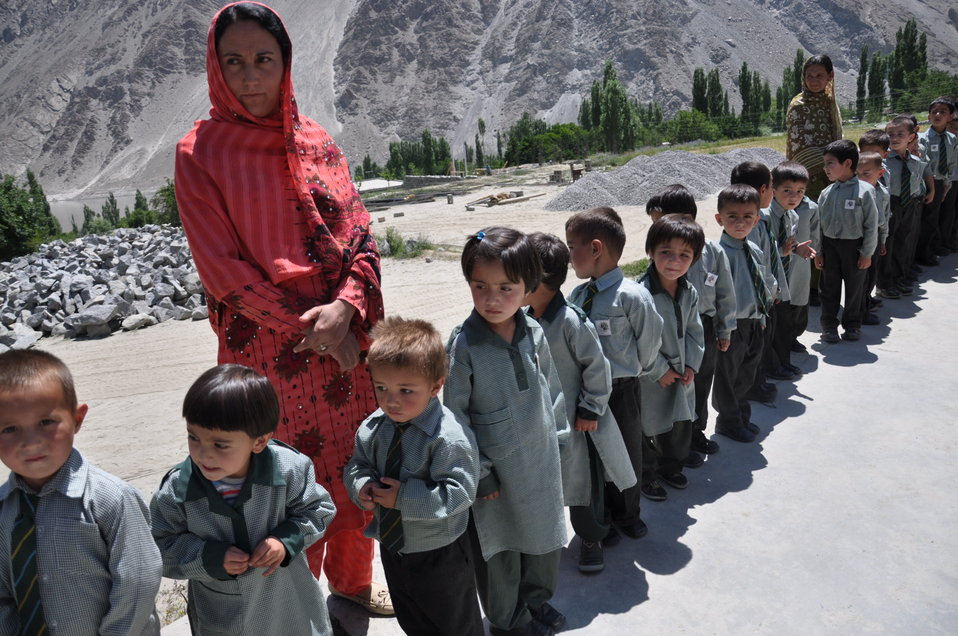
School children at Gulmit gathered to welcome Deputy Director Karen Freeman (USAID)

In Gulmit, Deputy Mission Director Karen Freeman visited with students, parents, and teachers who are benefitting from the construction of a hostel for female students in a disaster-hit area of Hunza. At least 40 female students will stay in the hostel every year. Freeman toured the school and met with students, where she emphasized that the United States government is committed to not only helping communities rebuild after disasters like the 2010 floods, but also to improving access to quality education and teachers.